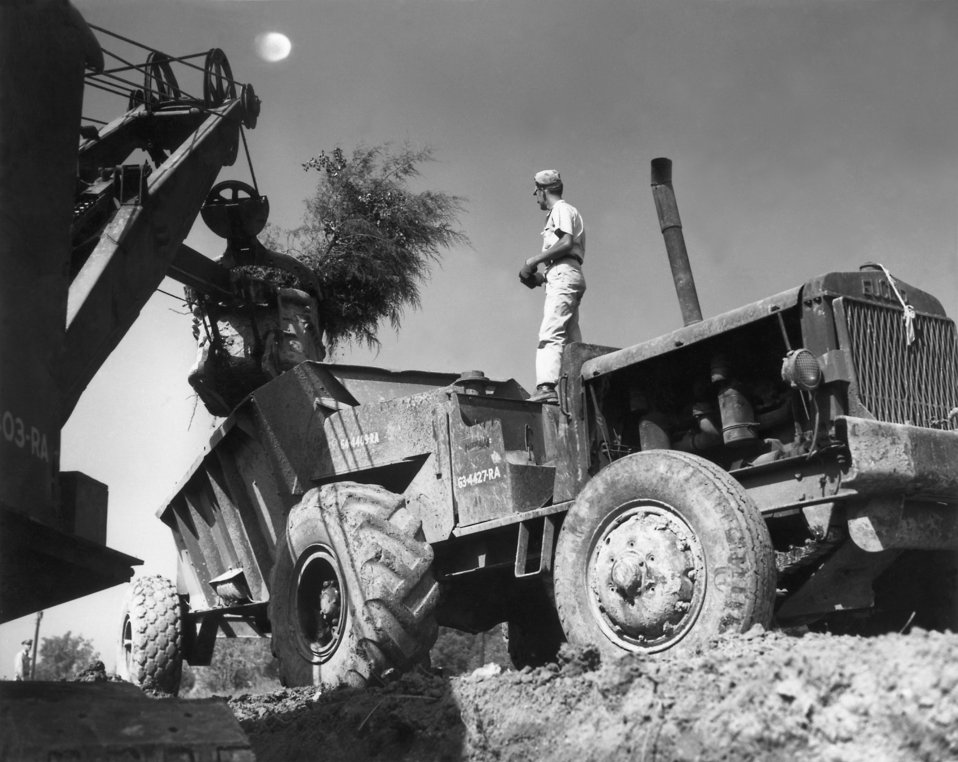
Construction equipment Oak Ridge

PRO813-4 DOE photo by Ed Westcott

Construction equipment Oak Ridge Tennessee 8/8/45